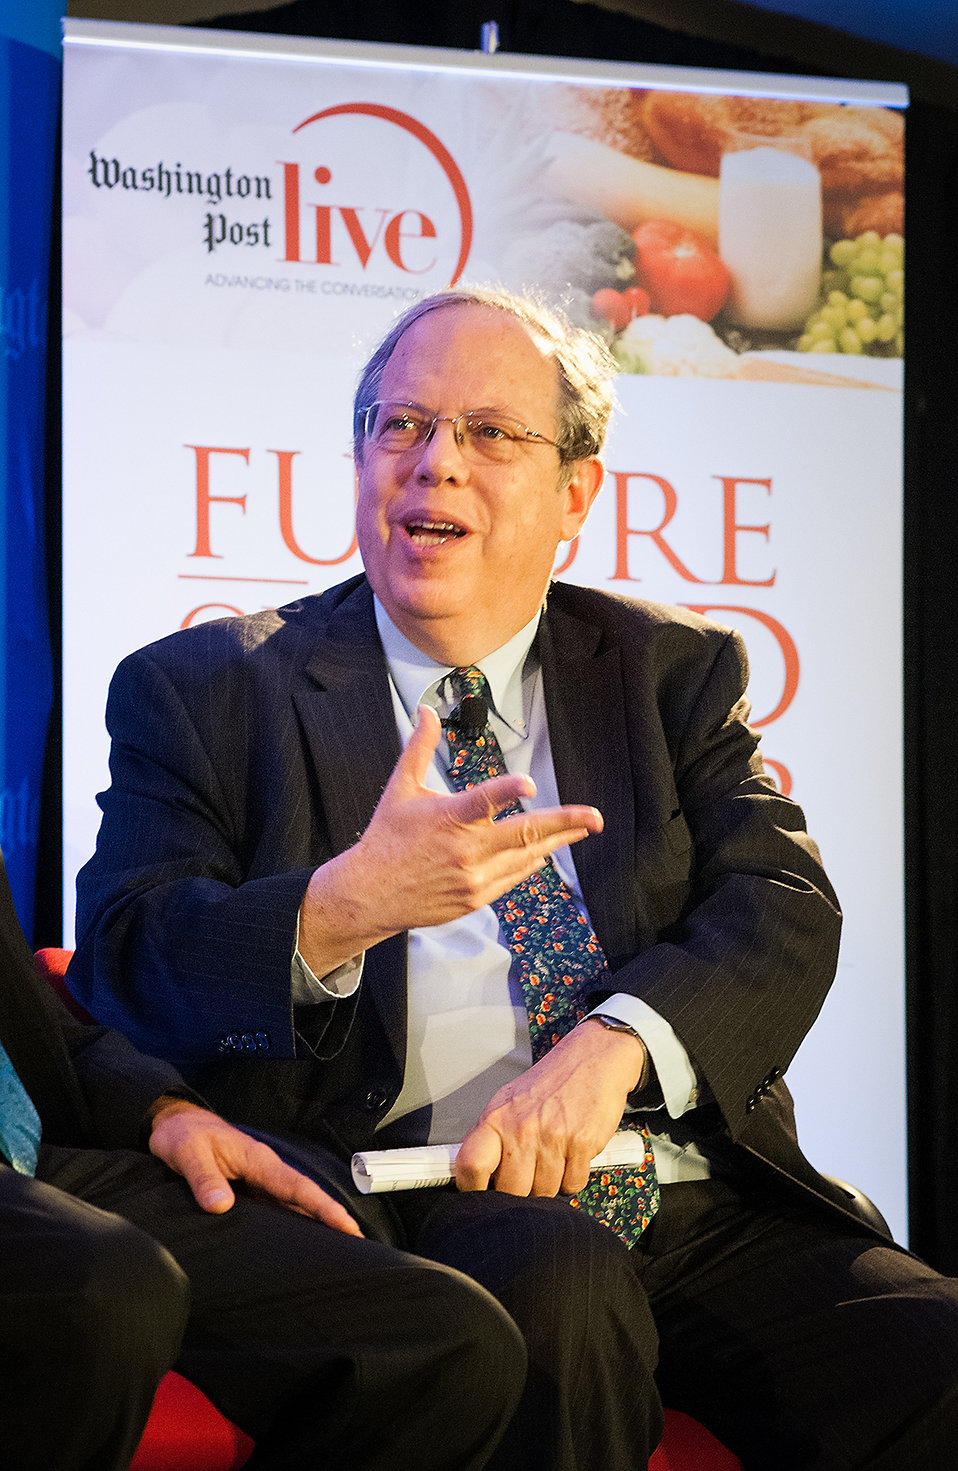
Food Research and Action Center President Jim Weil discusses The Growing Consumer Demands for a Healthy Sustainable Food System during the annual live forum, “Future of Food: Building a Sustainable Food System 2013,” sponsored by the Washington Post in Washington, D.C. on Wednesday, May 22, 2013. Agriculture Secretary Tom Vilsack, leading agricultural, government and nutrition experts discussed expanding healthy, sustainable food systems including public-private partnerships, the market’s role in nutrition and the future of agricultural innovation.